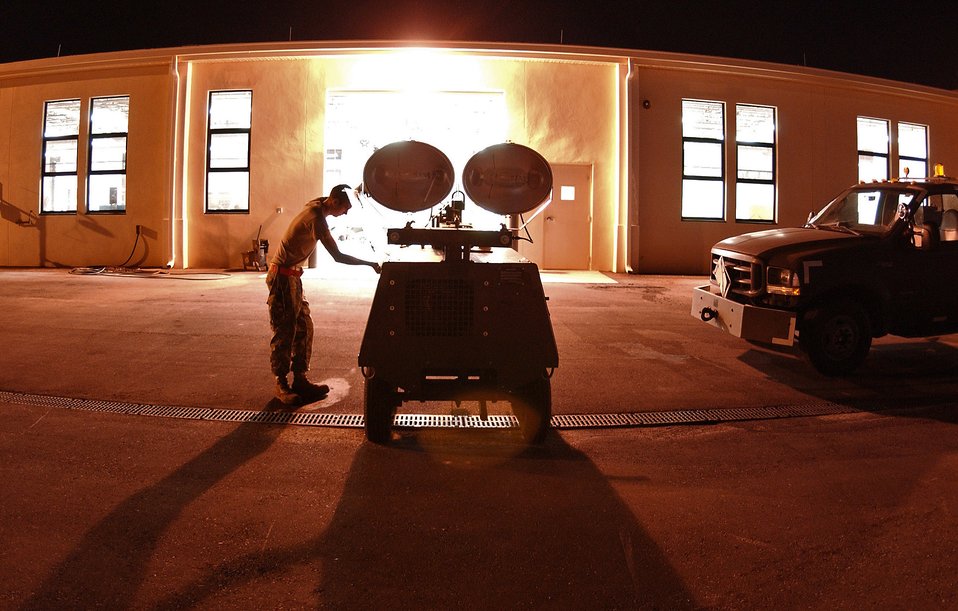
Let there be light

Airman 1st Class Anthony Dodge repairs floodlights Nov. 20 at the aerospace ground equipment shop at MacDill Air Force Base, Fla. The floodlights are used to illuminate an area when maintainers are working on an aircraft at night.